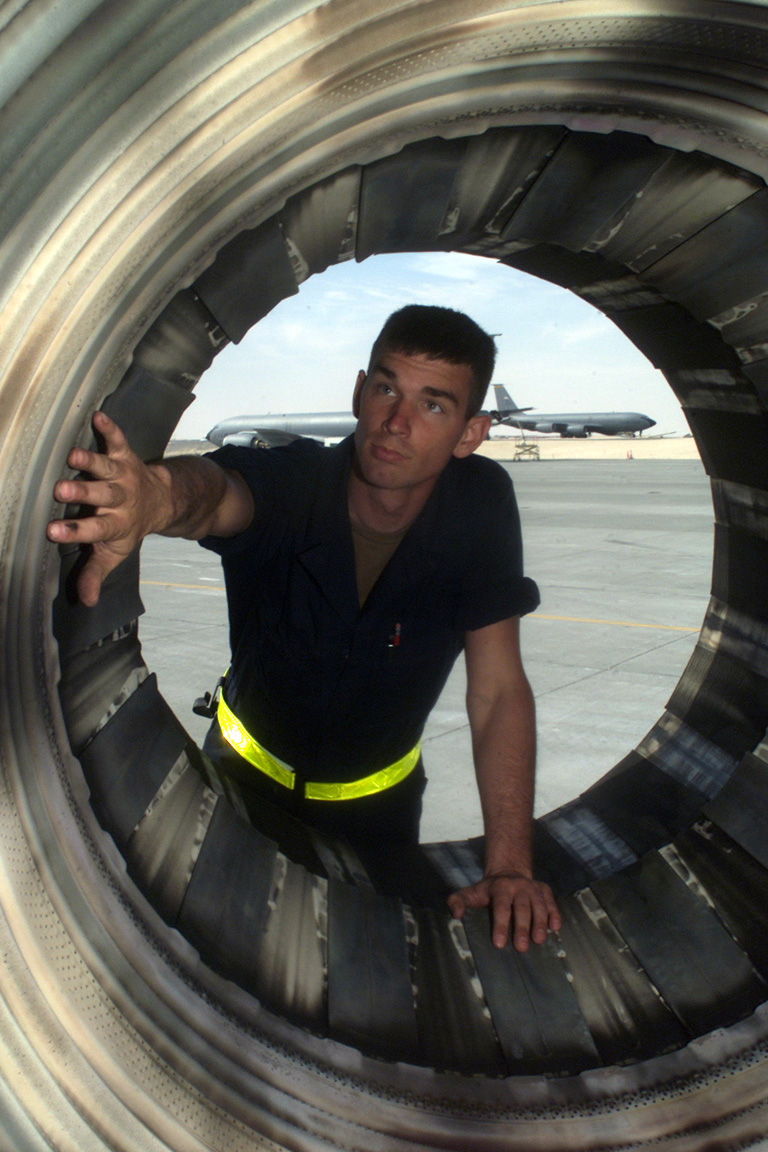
Upclose afterburner

AL UDEID AIR BASE, Qatar -- Airman 1st Class Gilmer Williams, 379th Aircraft Expeditionary Maintance Squadron here performs a after burner inspection before a training sortie.